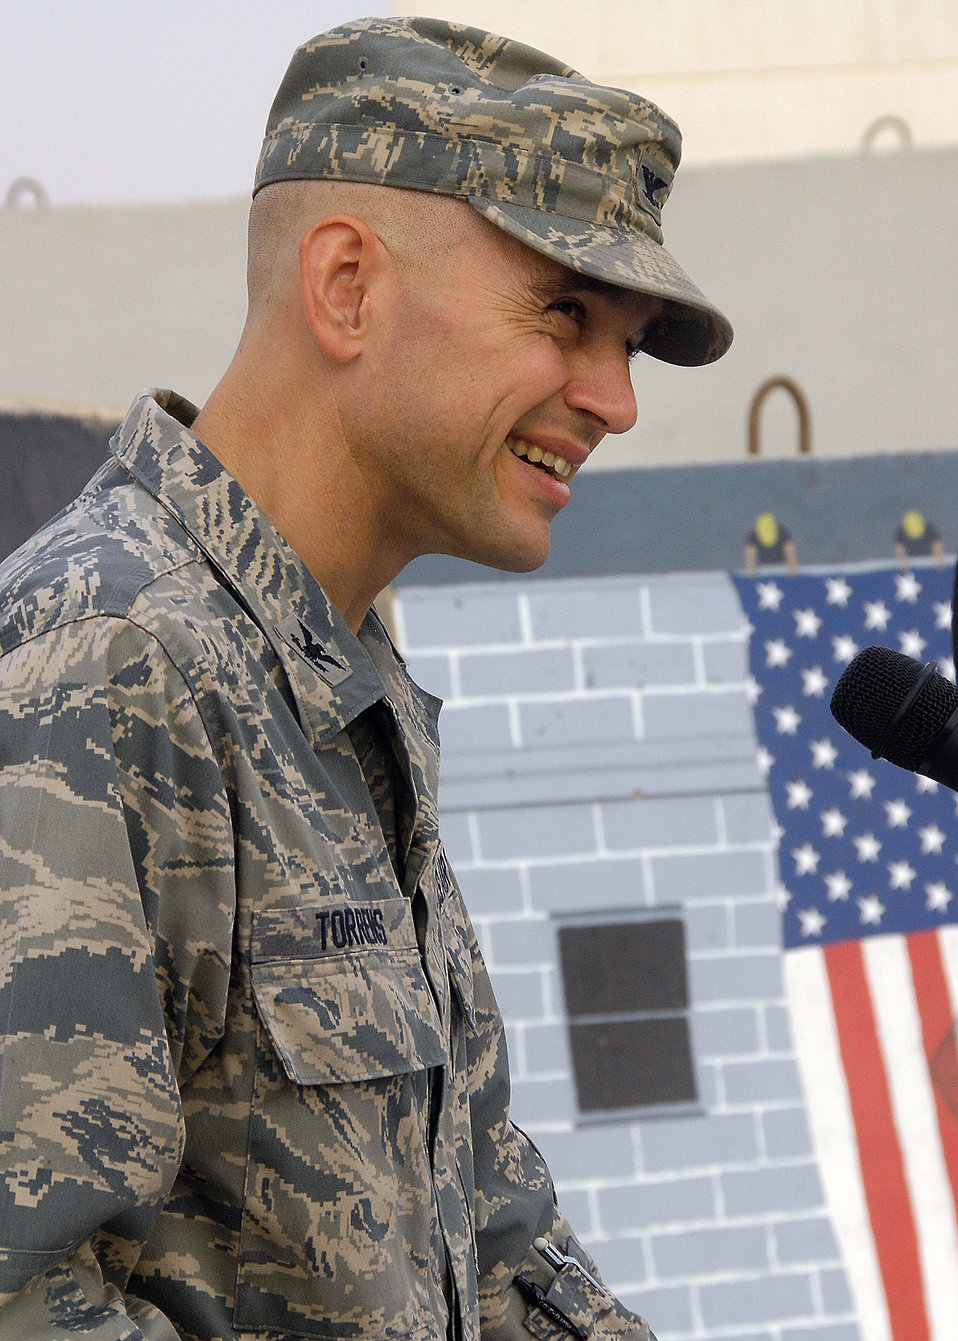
Ceremony inspires members to never forget Sept. 11

Col. Cameron Torrens gives a speech on the events of Sept. 11, 2001, and the way they changed the military mindset during the Sept. 11 Remembrance Ceremony Sept. 11 at an air base in Southwest Asia. The ceremony included a wreath-laying ceremony, a 21-gun salute and the playing of